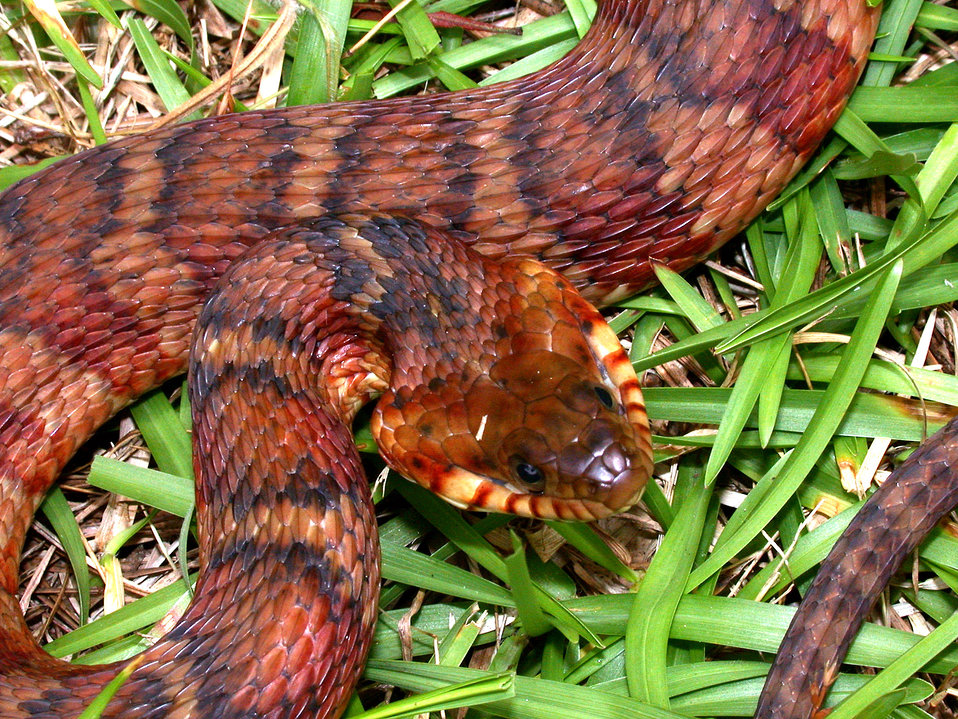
This photograph depicted a superior view of a potential cottonmouth mimic, the 'southern water snake', Nerodia fasciata. This image was used in a visual comparison with three species of cottonmouths, the 'eastern cottonmouth' Agkistrodon p. piscivorus, (PHIL# 8125), the 'Florida cottonmouth' Agkistrodon p. conanti, (PHIL# 8126), and the 'western cottonmouth' Agkistrodon p. leucostoma, (PHIL # 8124).N. fasciata is a snake whose habitat includes hurricane-prone regions of the United States, which is of importance to those who either live in these regions, or who might be deployed to such areas as a first-responder offering aid to those affected by such a disaster.